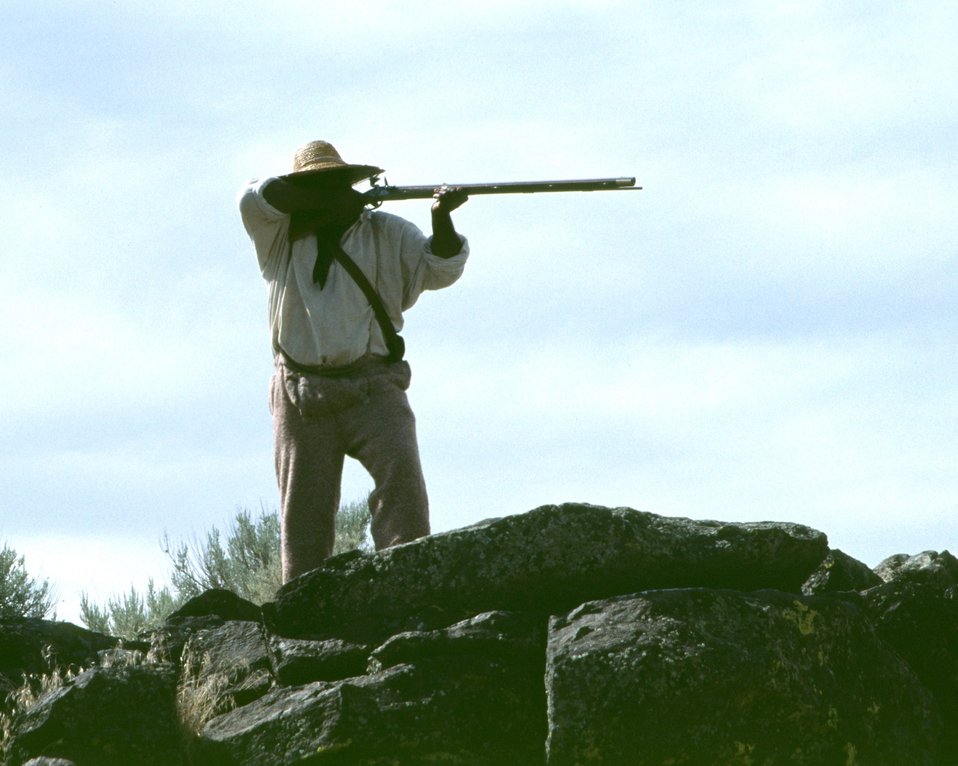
Dylan Prichertt portrays a black pioneer scout.